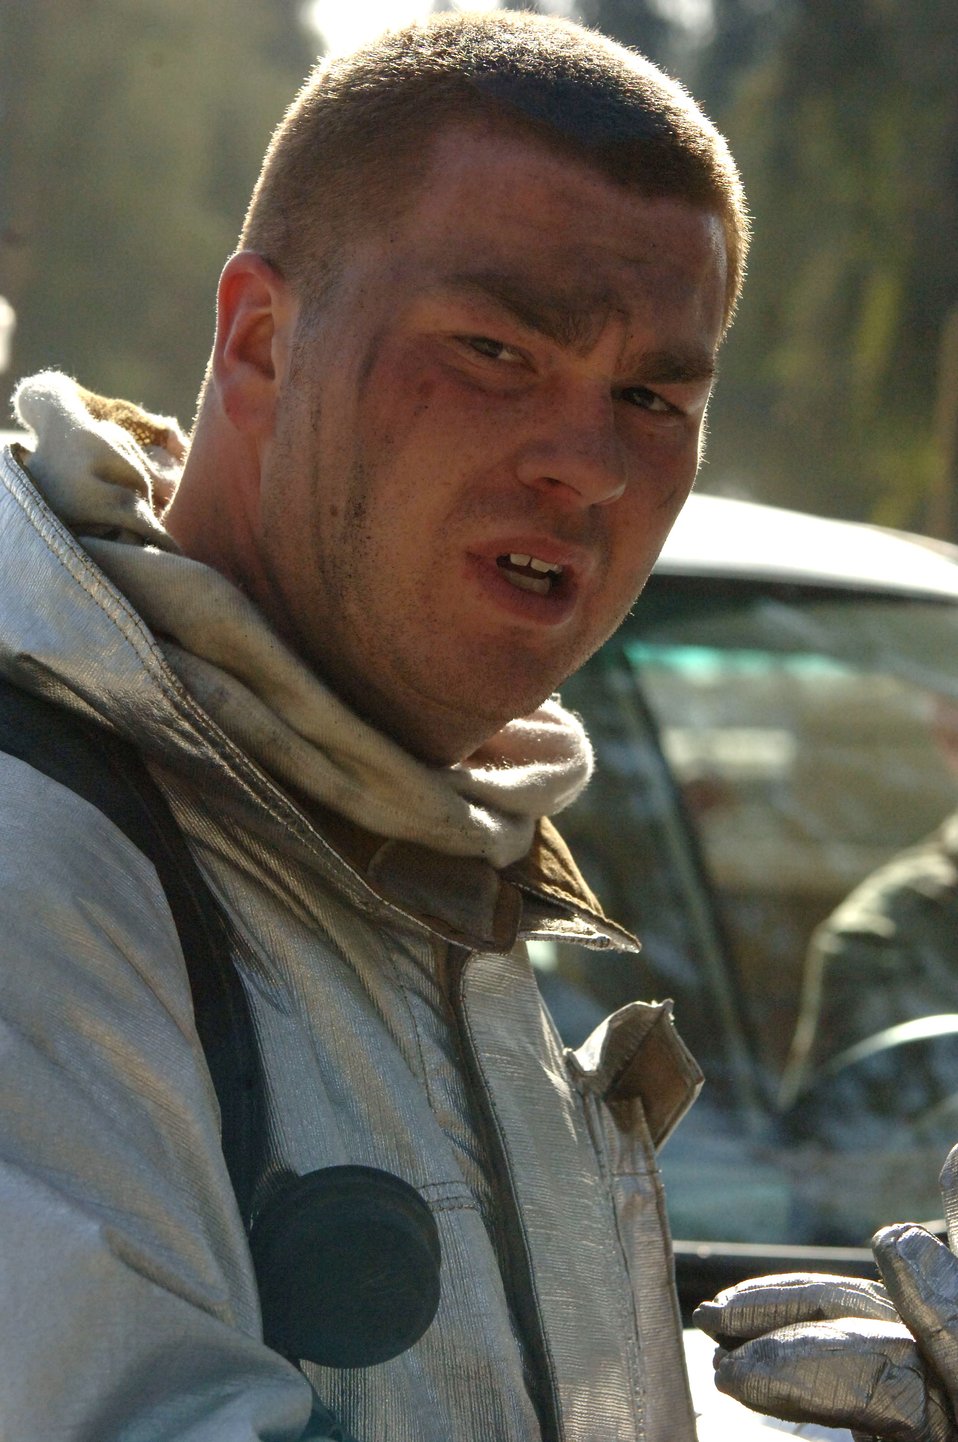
Five-alarm blaze

Staff Sgt. Adam Thurston takes a break after fighting a fire at a weapons training facility March 11, 2006, at Victory Base Complex, Iraq. American and Iraqi firefighters from five stations battled the blaze at the facility. He is with the 447th Expeditionary Civil Engineer Squadron Fire Department.